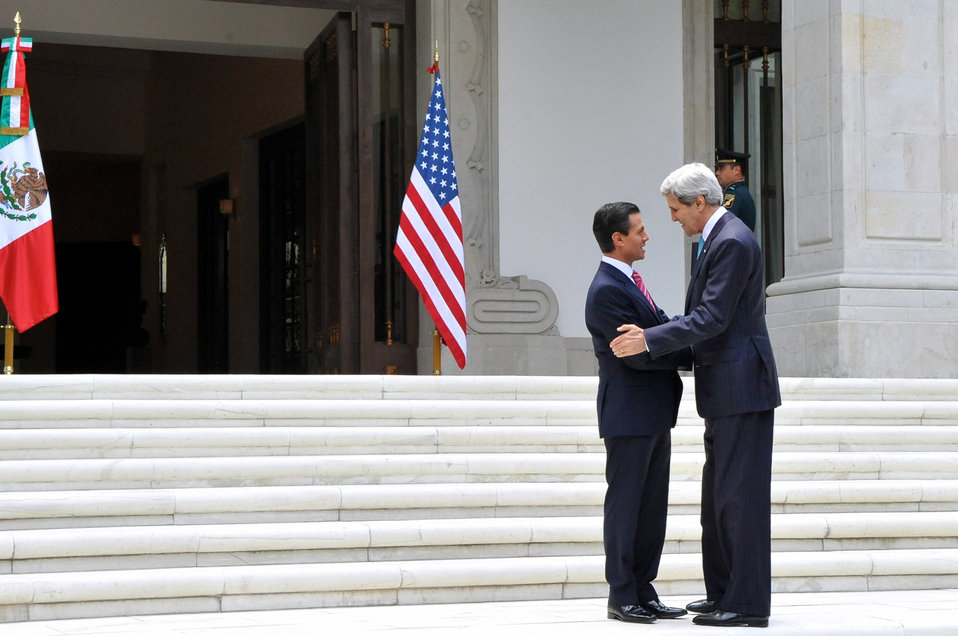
Mexican President Peña Nieto Greets Secretary Kerry at Los Pinos in Mexico City

Mexican President Enrique Peña Nieto greets U.S. Secretary of State John Kerry on the front steps of Los Pinos, the presidential residence and office compound, before a bilateral meeting in Mexico City on May 21, 2014.